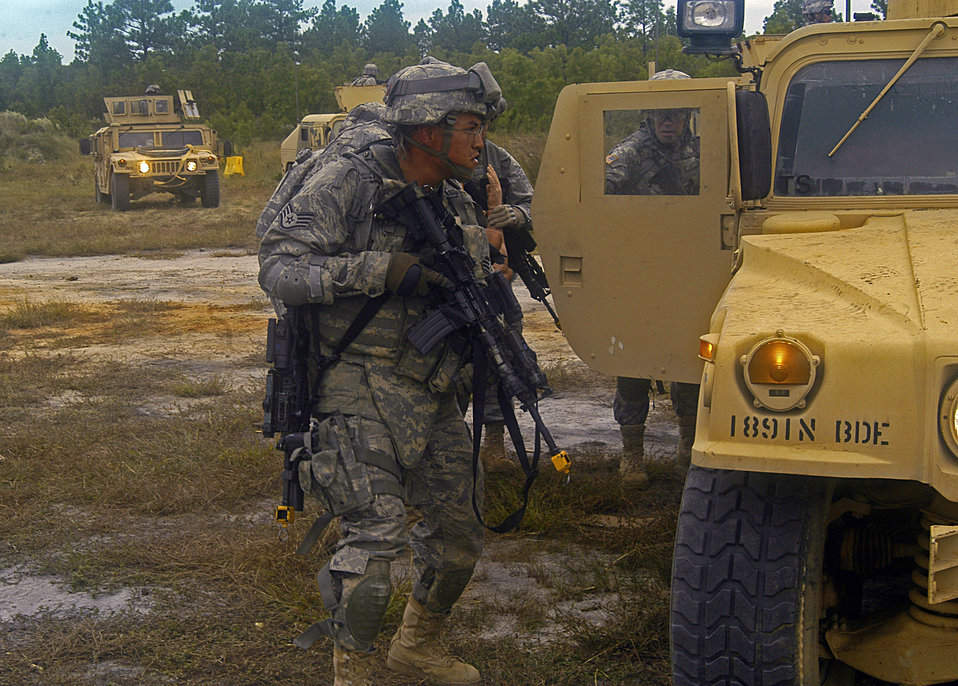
Servicembers prepare for Afghan deployments

Airmen take cover during Combat Skills Training Sept. 23 at Fort Bragg, N.C. Airmen, Sailors and Soldiers are receiving combat training in anticipation of their deployment as members of 12 different Provincial Reconstruction Team members deploying to Afghanistan in November. The training includes convoy operations, weapons, counter improvised explosive device tactics, language and cultural training and combat lifesaving skills training.